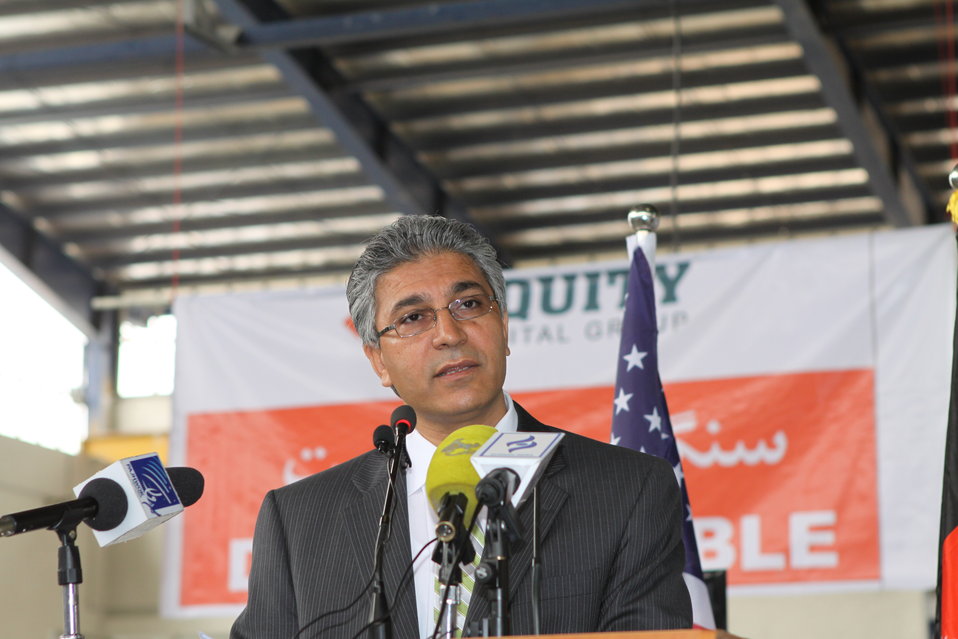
100525 Hirat Marble Conference 157